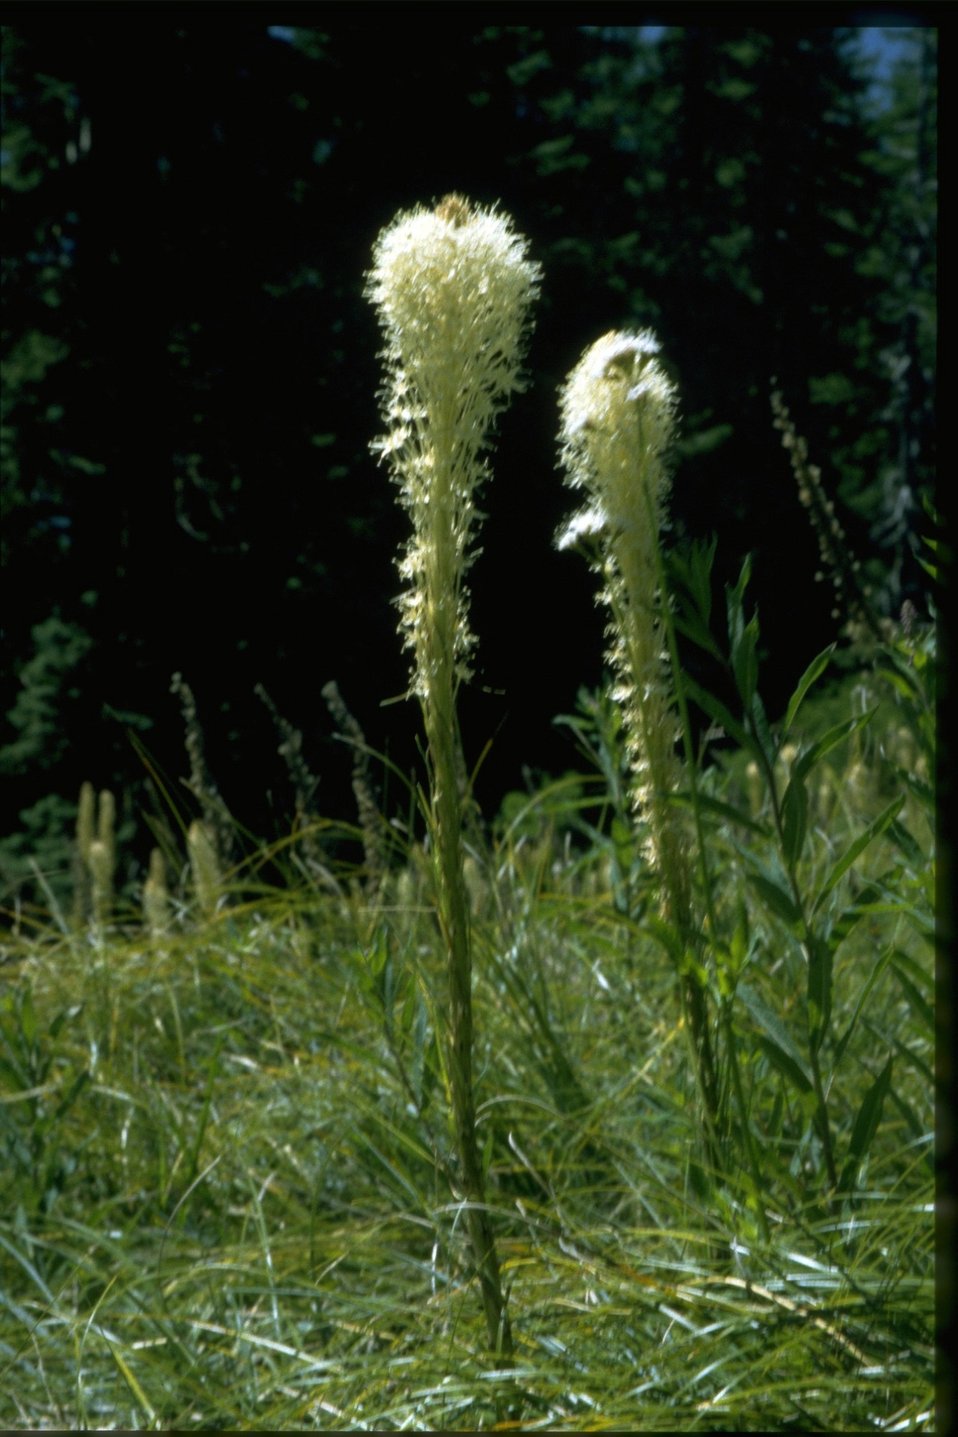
Medium shot of Xenophyllum tenax.